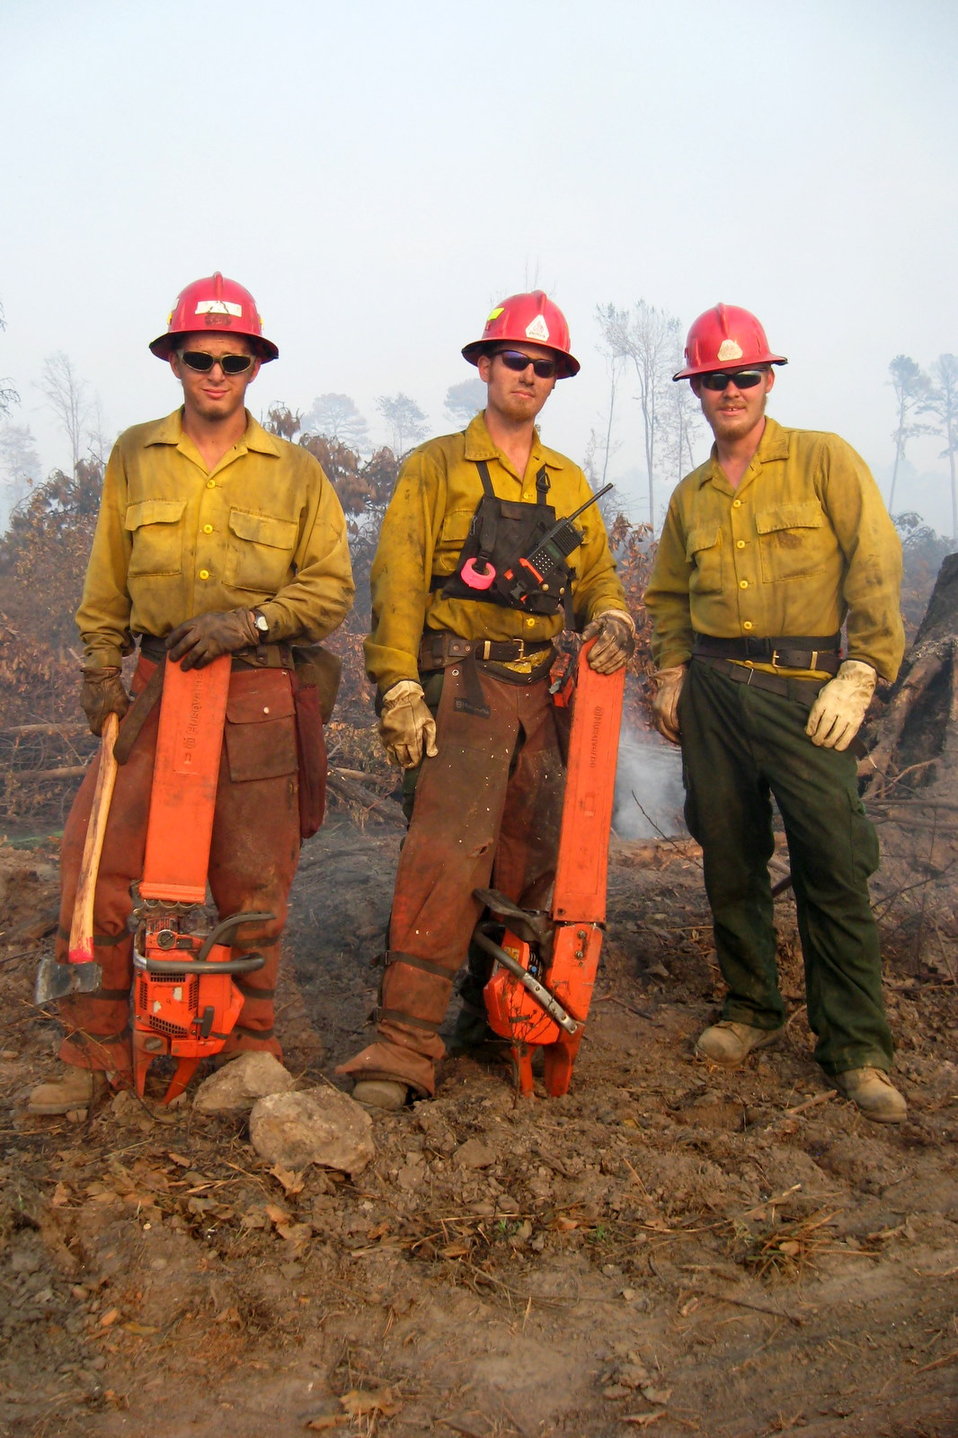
Sawyer swampers

Suffolk, VA, August 2011: Highly trained firefighters work up to 16 hours a day fighting fires like the Lateral West Fire in Great Dismal Swamp.